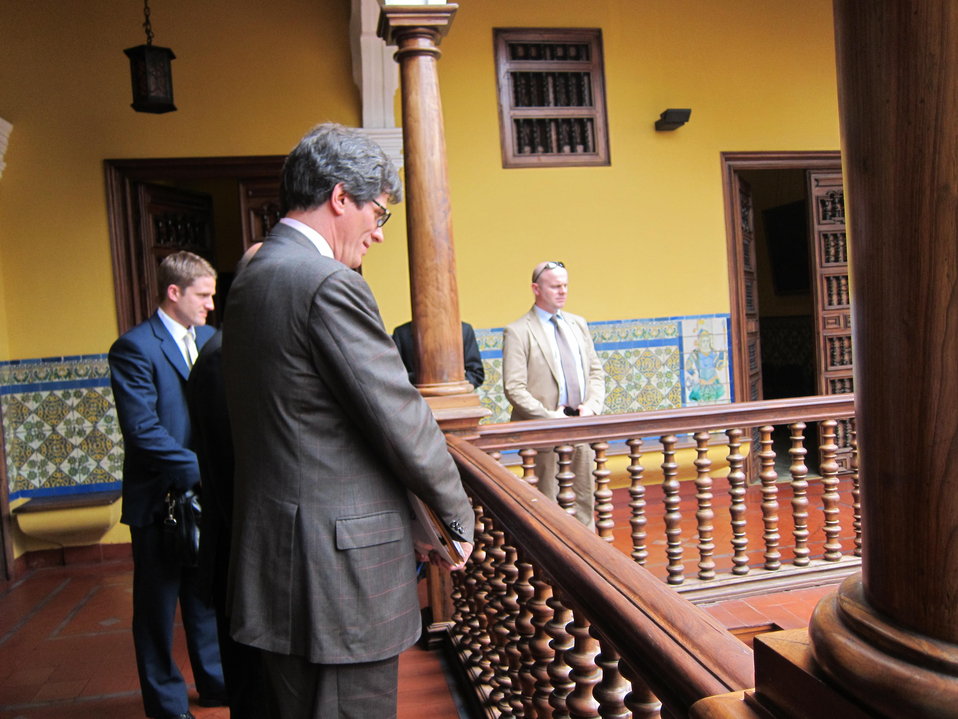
Assistant Secretary Fernandez Looks at the Courtyard

Assistant Secretary of State for Economic and Business Affairs Jose Fernandez looks at the courtyard at the Peruvian Ministry of Foreign Affairs in Lima, Peru, on February 16, 2012.